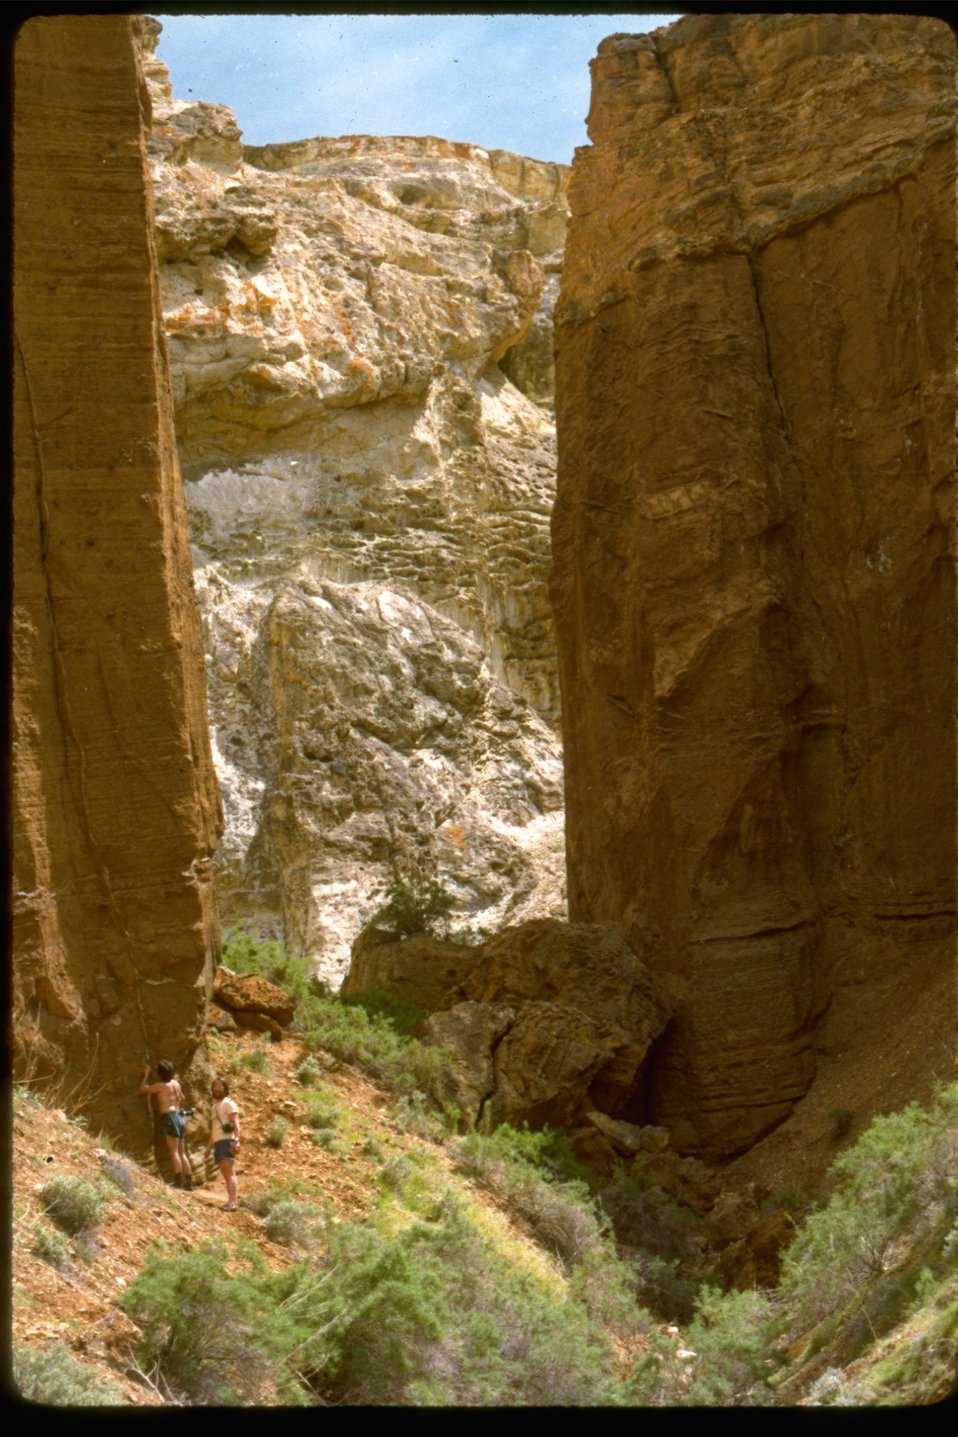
Hikers standing in the Blue Canyon Wilderness Study Area. WSA 3-73.